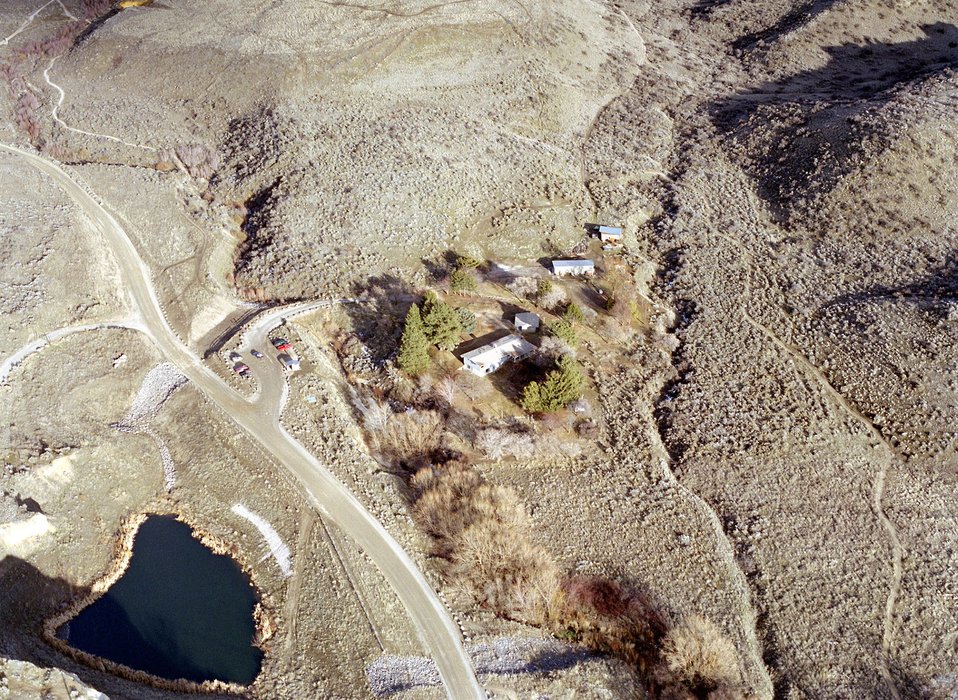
Recreation on the Boise Front Foothills Aerial Four Rivers Field Office LSRD Lower Snake River District